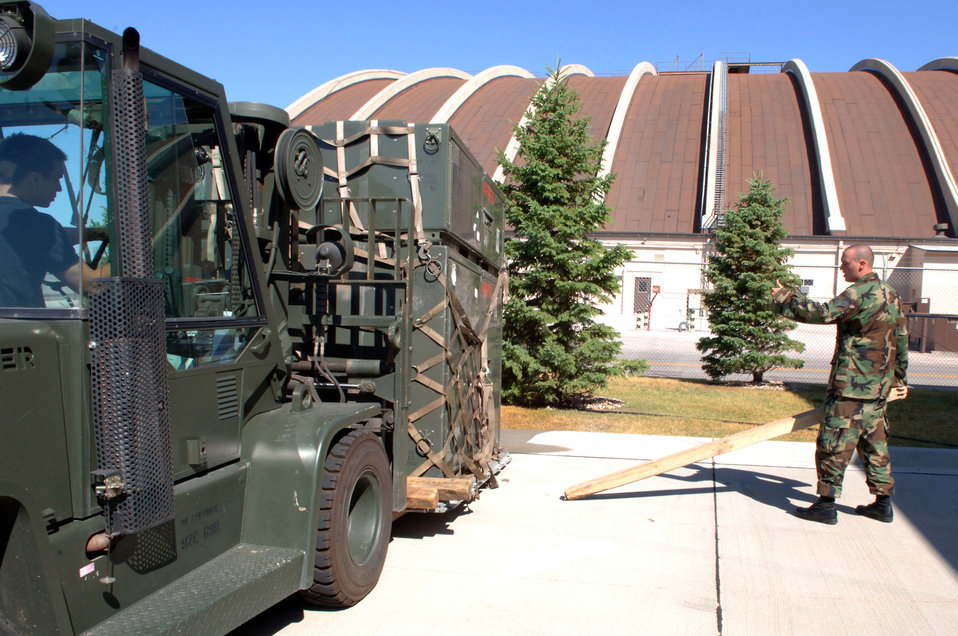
Forklift

Senior Airman Richard Shelatz signals Airman 1st Class Ryan Logan to lift cargo at Ellsworth Air Force Base, S.D., on July 11. Both Airmen are with the 28th Civil Engineer Squadron.